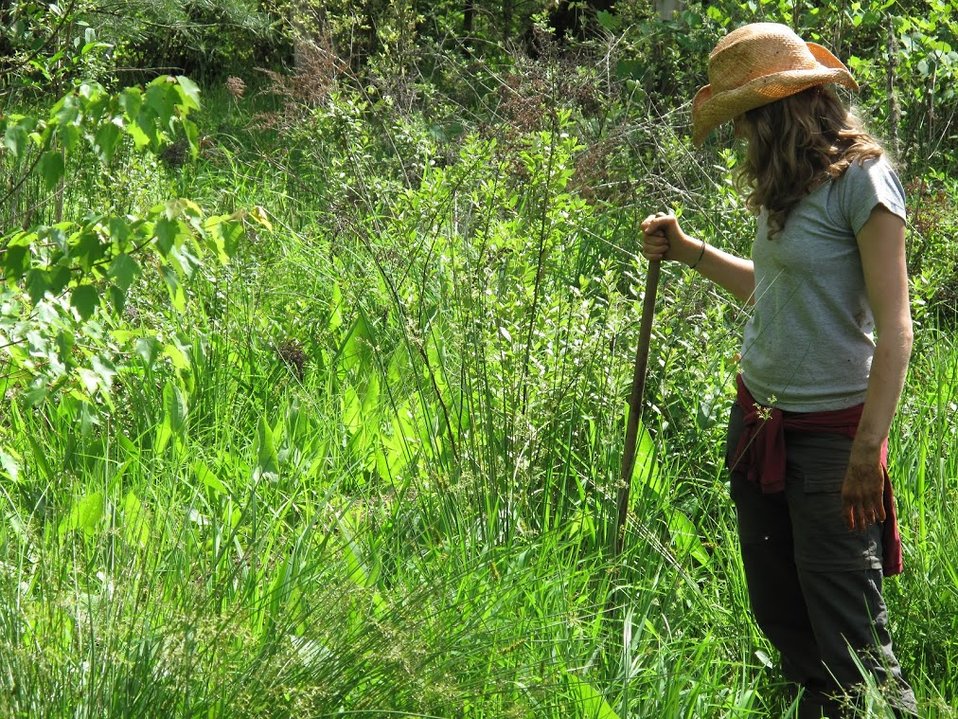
Bog turtle

Scientific name: Clemmys muhlenbergii
Status: Threatened and similarity of appearance

On the lookout for bog turtles NC Wildlife Resources Commission.